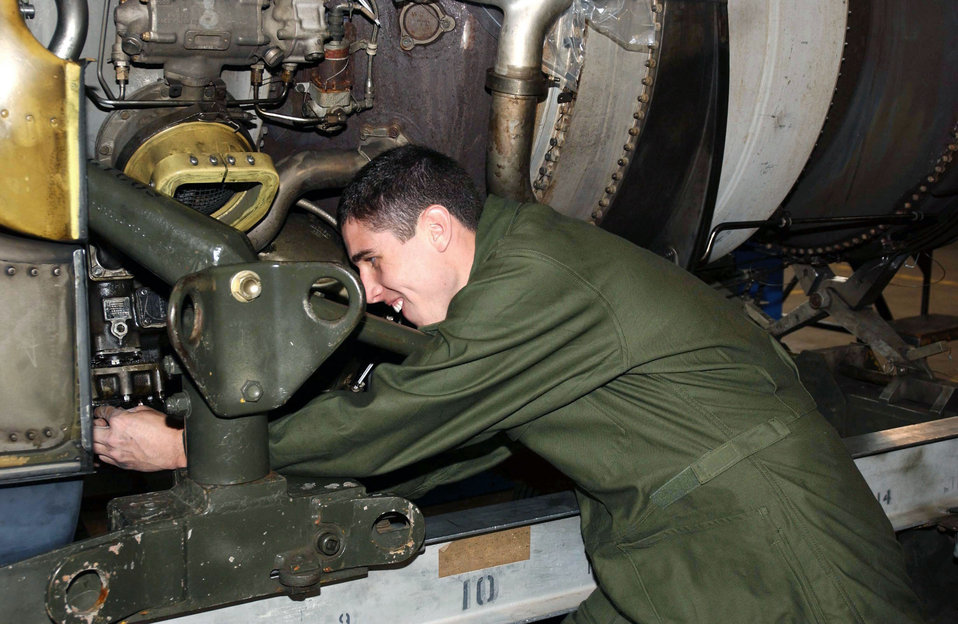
Preventative maintenance

BARKSDALE AIR FORCE BASE, La. -- Airman Braden Kelly performs preventative maintenance on an engine during the nuclear operational readiness exercise here May 11. Airman Kelly is assigned to the 2nd Maintenance Squadron.